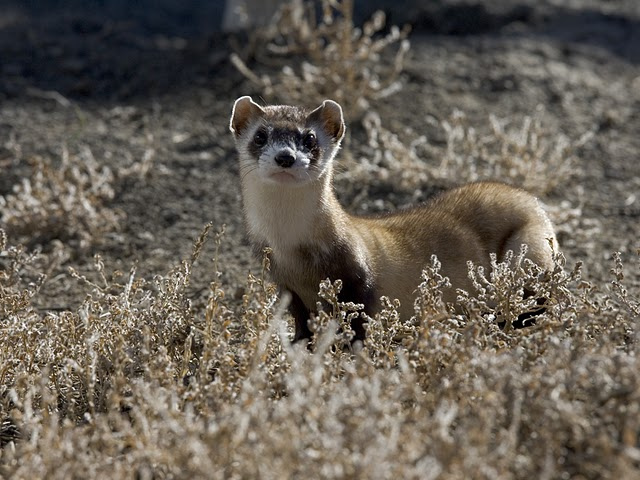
black-footed ferret

National Black-footed Ferret Conservation Center, CO